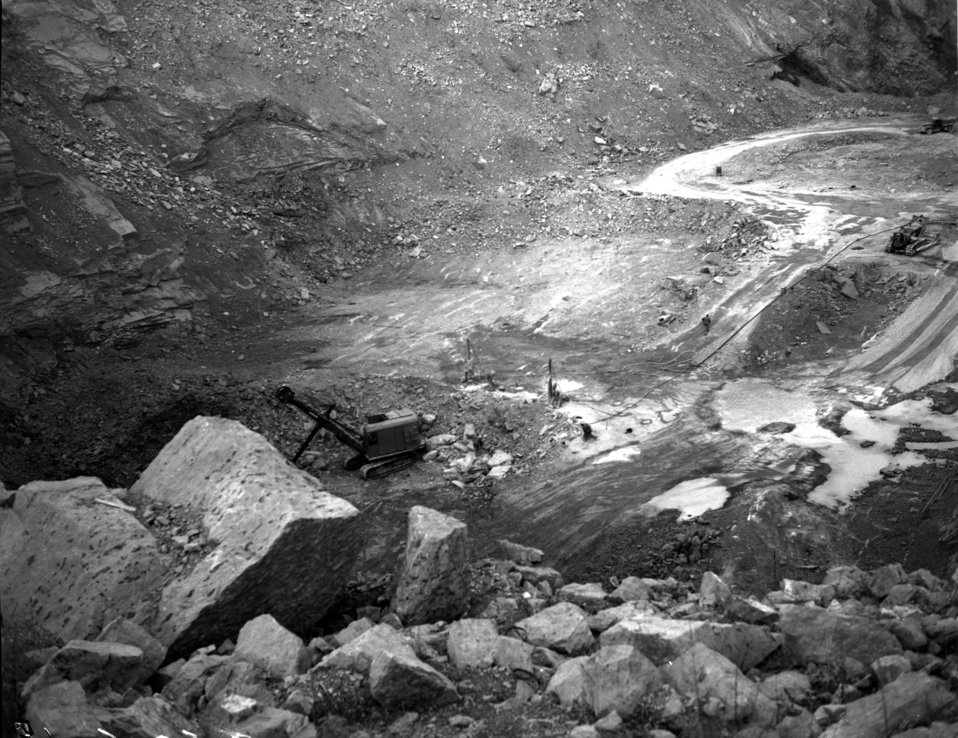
Quarry Oak Ridge

3263-6c DOE photo Ed Westcott 1-23-1947